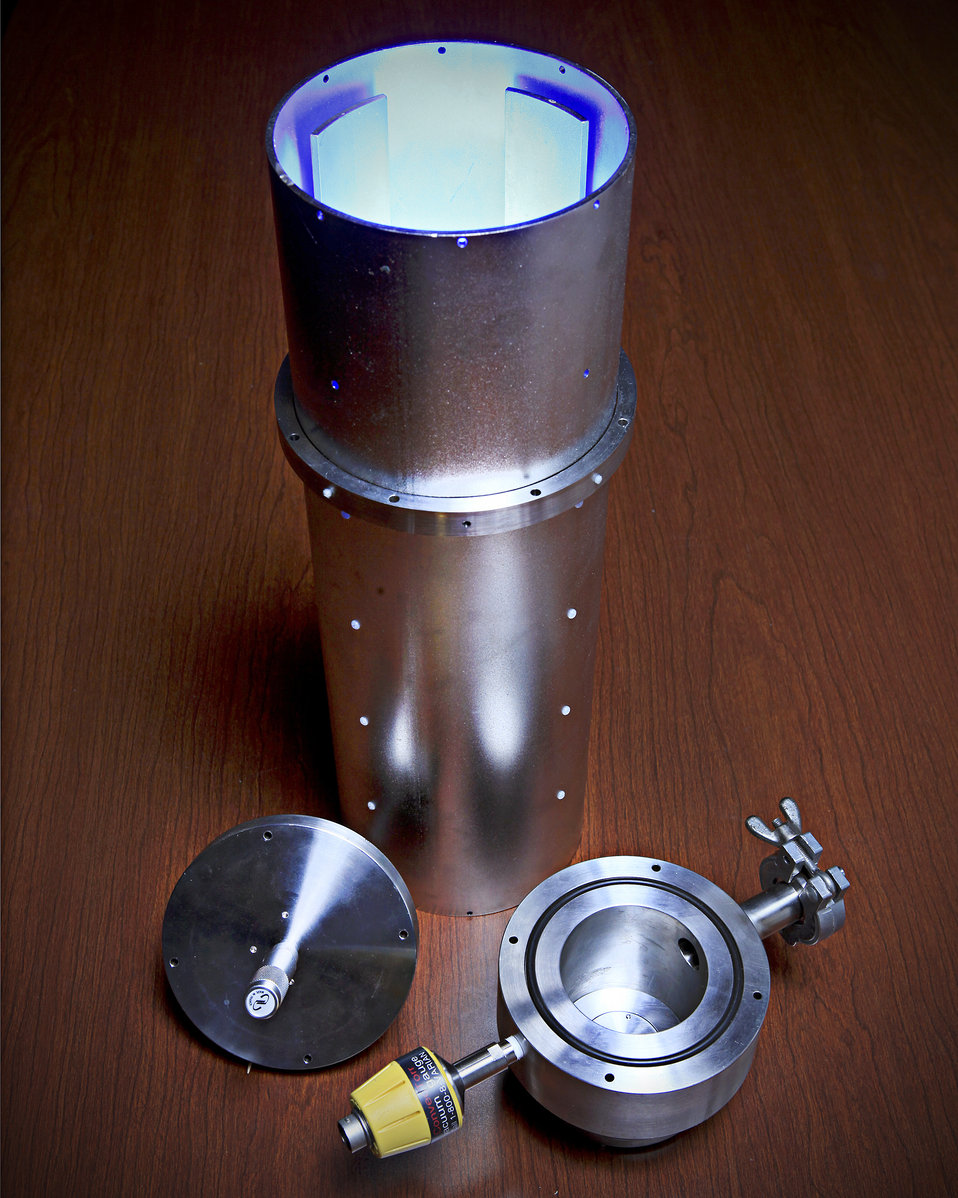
Shown is the mass -independent kinetic-energy reducing inlet system form mass spectrometer at Oak Ridge National Laboratory.

This technology permits high-resolution mass analysis of large, intact biological molecules without having to break them apart. With this spectrometer, the large bimolecular ions are captured in a trapping field while air is pumped away. Conventional spectrometers pump most of the ions away with the air, making them less sensitive. This mass spectrometer delivers much high resolution in the high mass range compared to conventional spectrometers. For specific use in the medical field, the mass spectrometer can be developed to rapidly image a tumor and define the boundaries so the tumor can be most effectively treated.